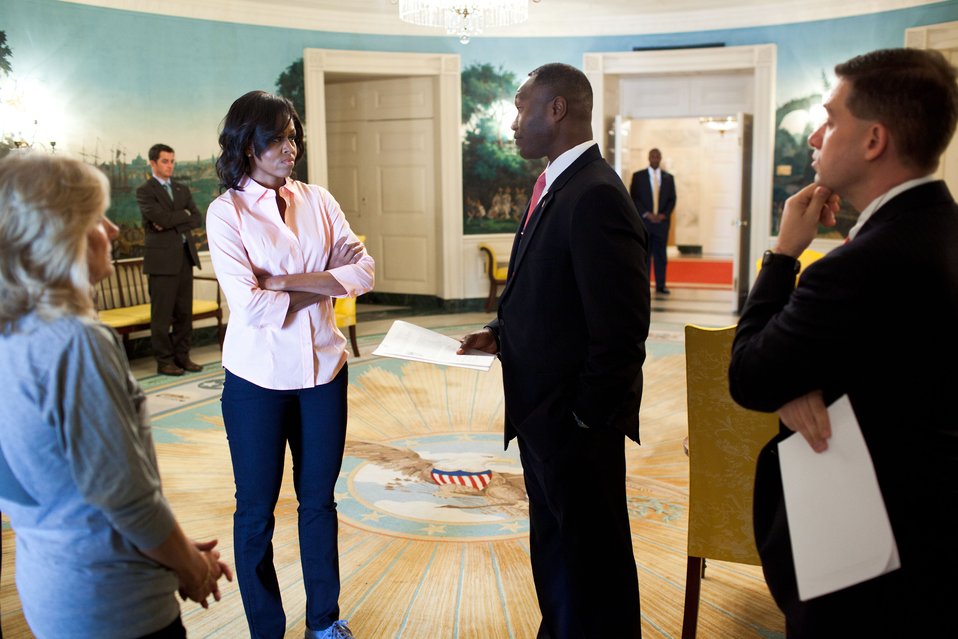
Airman making difference in Office of First Lady

First lady Michelle Obama and Jill Biden are briefed by White House Fellow Lt. Col. Rodney Lewis Oct. 17, 2011, before a Joining Forces Initiative event in Washington. Lewis began his fellowship in August 2011 when he was assigned to the Office of the First Lady.